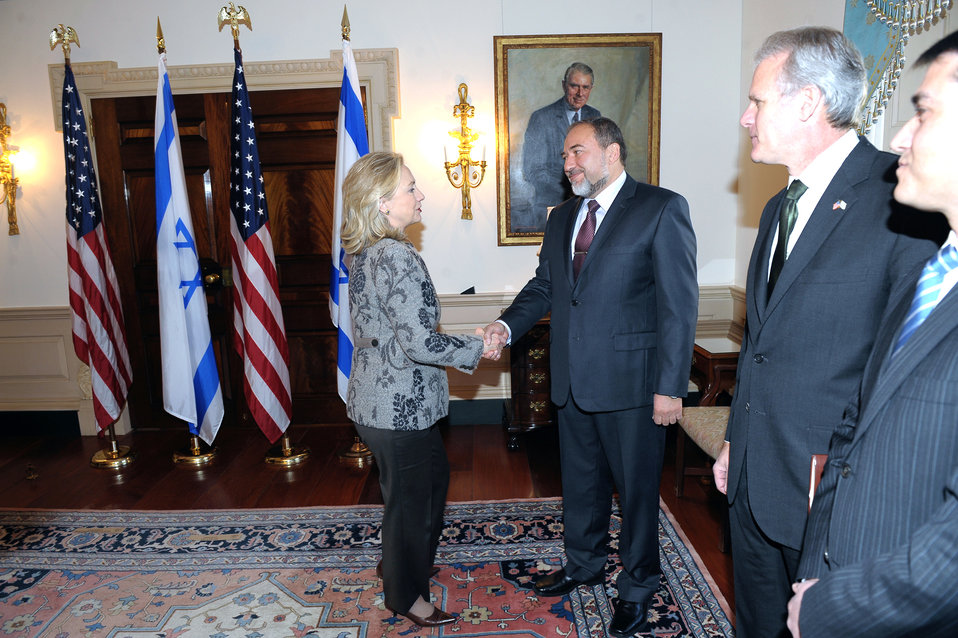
Secretary Clinton Meets With Israeli Deputy Prime Minister and Foreign Minister Liberman

U.S. Secretary of State Hillary Rodham Clinton shakes hands with Israeli Deputy Prime Minister and Foreign Minister Avigdor Liberman at the U.S. Department of State in Washington, D.C., on February 7, 2012.